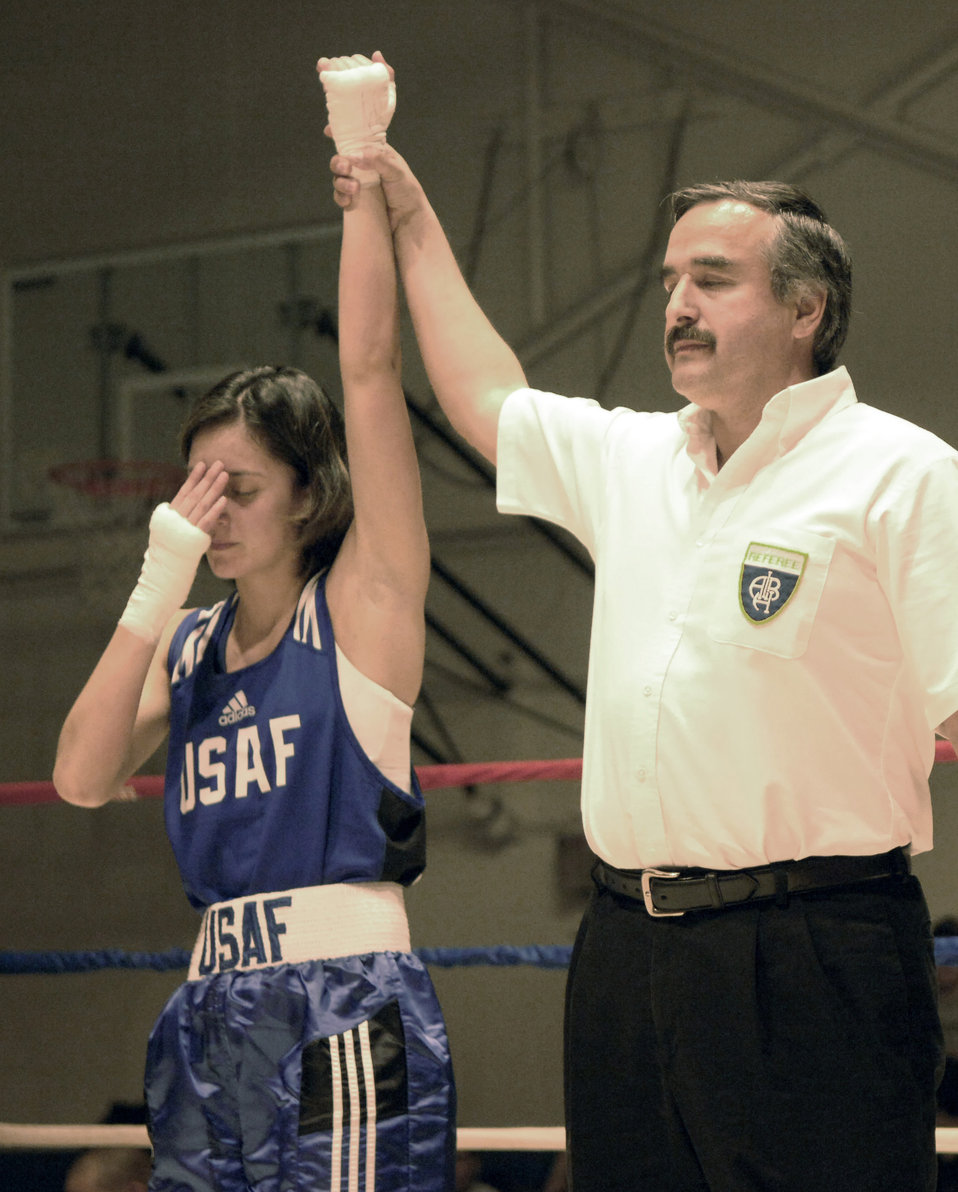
Boxing for the team

SAN ANTONIO (AFPN) -- Celsa Reyes reacts to the verdict of her winning a match by decision Jan. 20. Reyes is from F.E. Warren Air Force Base, Wyo., and will represent the Air Force at the Armed Forces Boxing Tournament at Fort Huachuca, Ariz., Feb. 6 to 11.